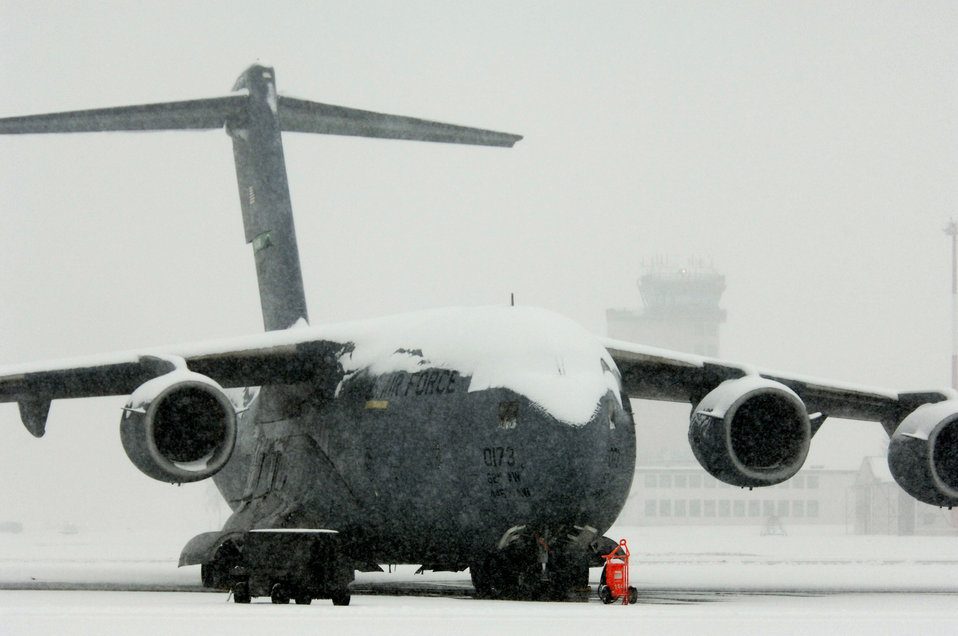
Snow-covered C-17s

Several days of storms left 6 inches of snow covering C-17 Globemaster IIIs at Ramstein Air Base, Germany, on Friday, March 3, 2006.